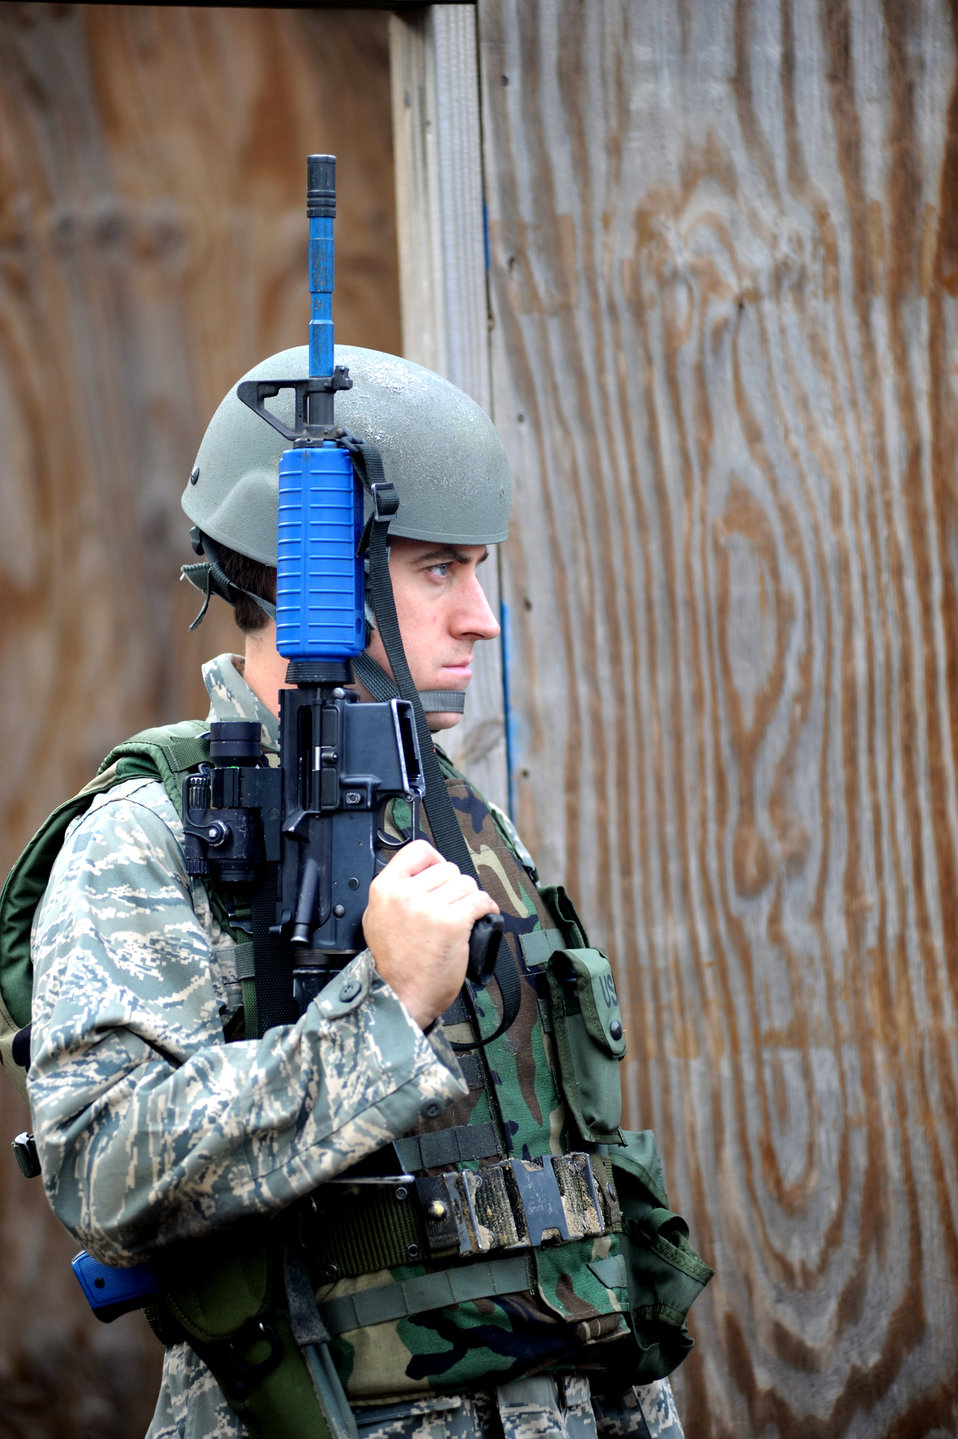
Learning the rules of engagement

Capt. Justin Swick trains on contingency skills basics during Oct. 1 at Fort Dix, N.J. Air Force legal career field members learned rules of use of force, rules of engagement and expeditionary basics for legal Airmen on deployment. The training is held for three days prior to them attending the Advanced Contingency Skills Training Course taught by the Air Force Expeditionary Center's 421st Combat Training Squadron on Fort Dix. Captain Swick is from the 27th Special Operations Wing at Cannon Air Force Base, N.M.